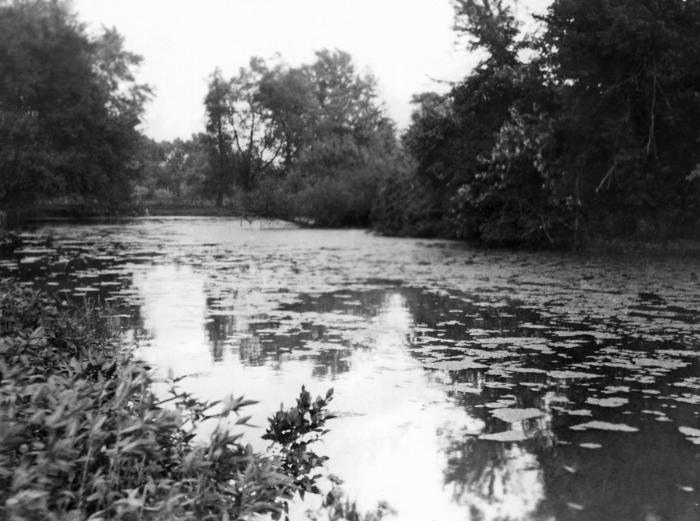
This historic 1925 photograph revealed the presence of pollution in the Cedar River near Austin, Minnesota. The environmental damage resulted from the dumping of both municipal waste, and waste from a local meat-packing plant into the river.